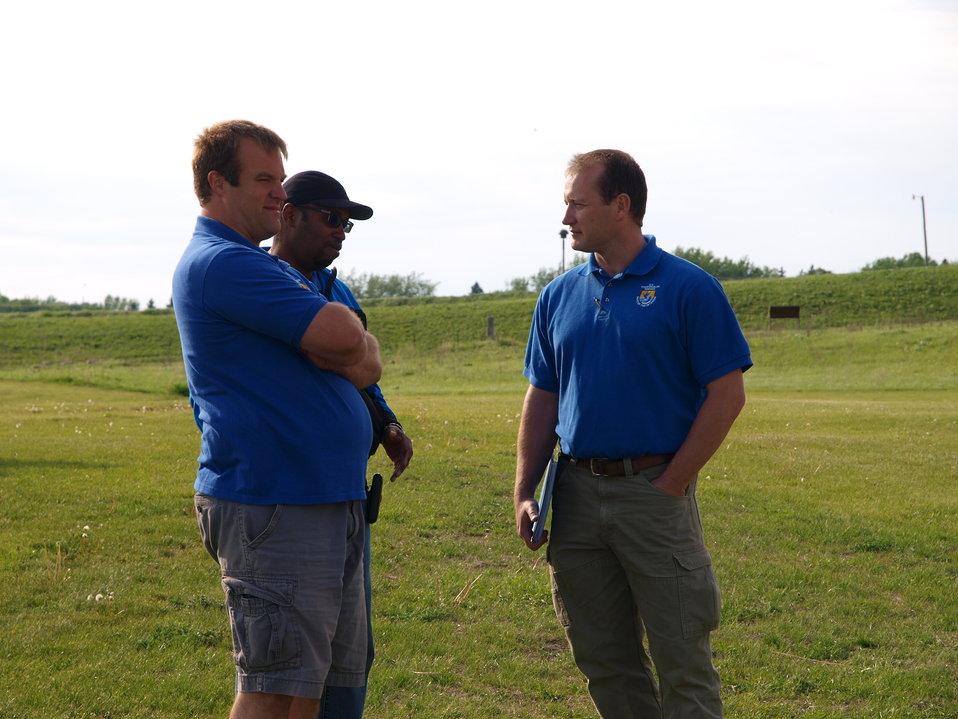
CDIP 2012 Fergus Falls

Jeremy, Wes, and Jeremy getting ready to engage.